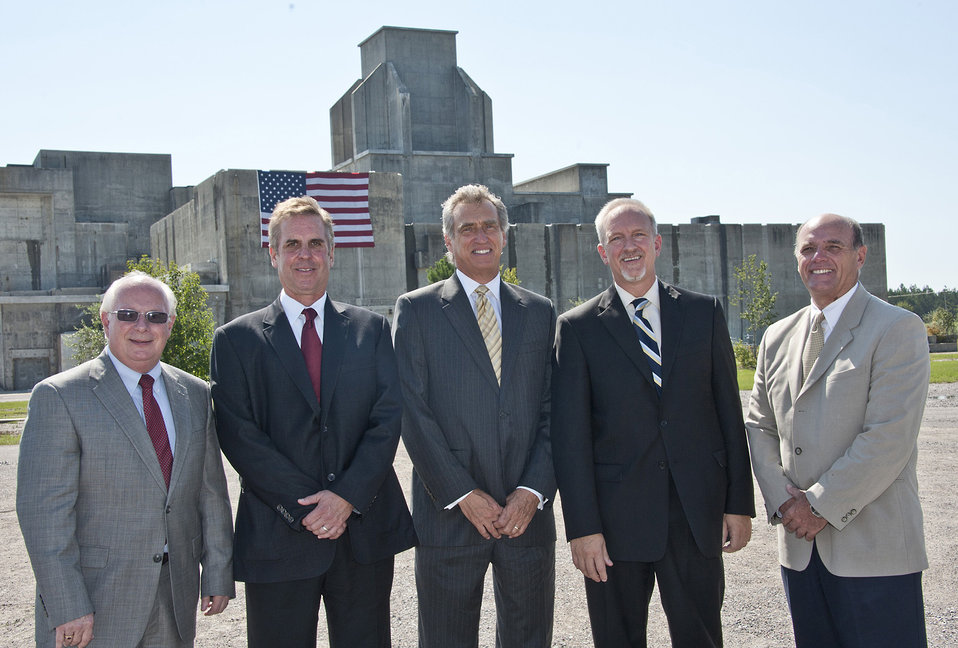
P and R Area Closures

Savannah River Site Manager Dr. David Moody, left to right, South Carolina Department of Health and Environmental Control Environmental Quality Control Deputy Commissioner Robert W. King, Jr., Savannah River Nuclear Solutions President and CEO Garry Flowers, EM Acting Assistant Secretary David Huizenga, and Environmental Protection Agency Region 4 Section Chief David Williams gather together at P Reactor on Sept. 29, 2011 to celebrate the cleanup and closure of the P and R Areas.